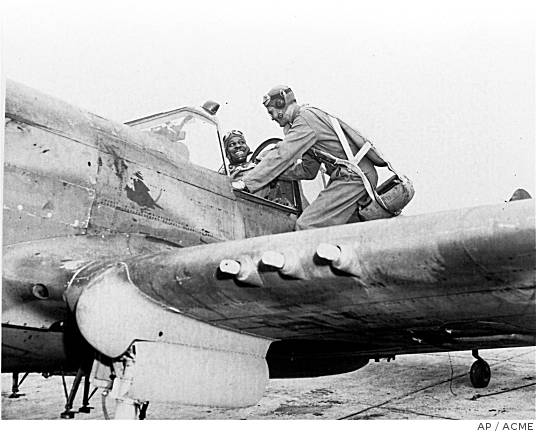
Benjamin O. Davis Jr. commanded the 332nd Fighter Group during World War II.